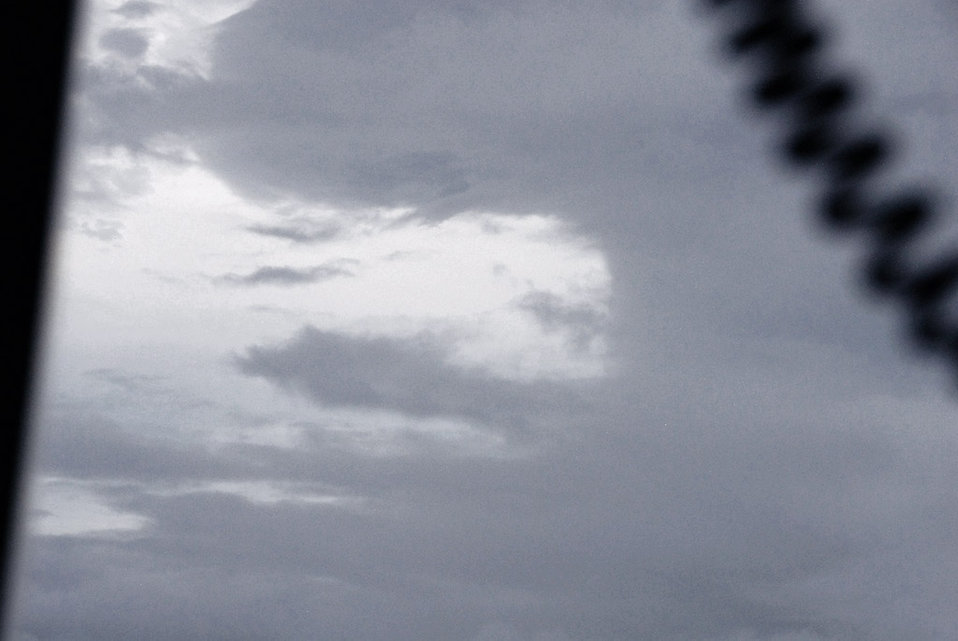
Hurricane Hunters fly nonstop into Ike

The eyewall of Hurricane Ike looms as the WC-130J Hurricane Hunter aircraft heads toward the center of the storm Sept. 10 over the Gulf of Mexico. Reserve Airmen of the 403rd Wing collect data inside the storm and send it to the National Hurricane Center, improving accuracy by up to 30 percent.